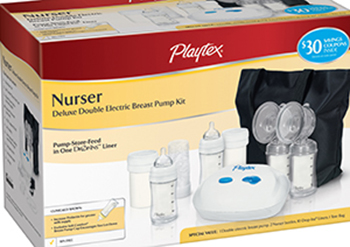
RECALLED – AC/DC power adapters used with breast pum

March 18, 2014 – Product Recall – Playtex Announces the Voluntary Nationwide Recall of Certain AC/DC Power Adapters Used With the Playtex® Nurser Deluxe Double Electric Breast Pump Due to Potential for Electric Shock.